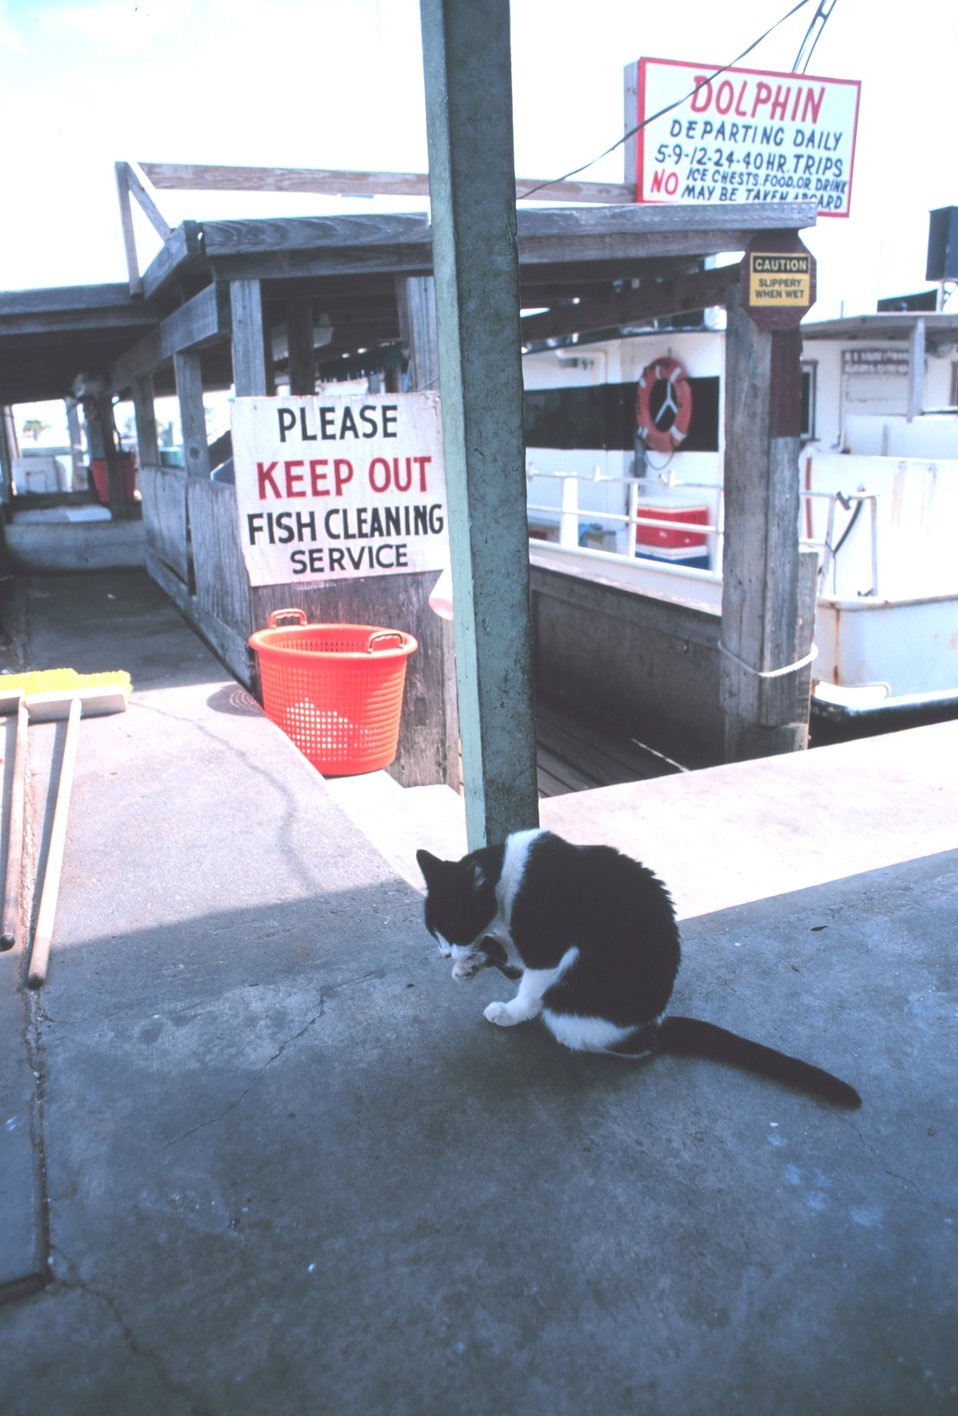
A fish cleaning expert awaits the next load of fish to land at the Dolphin Docks